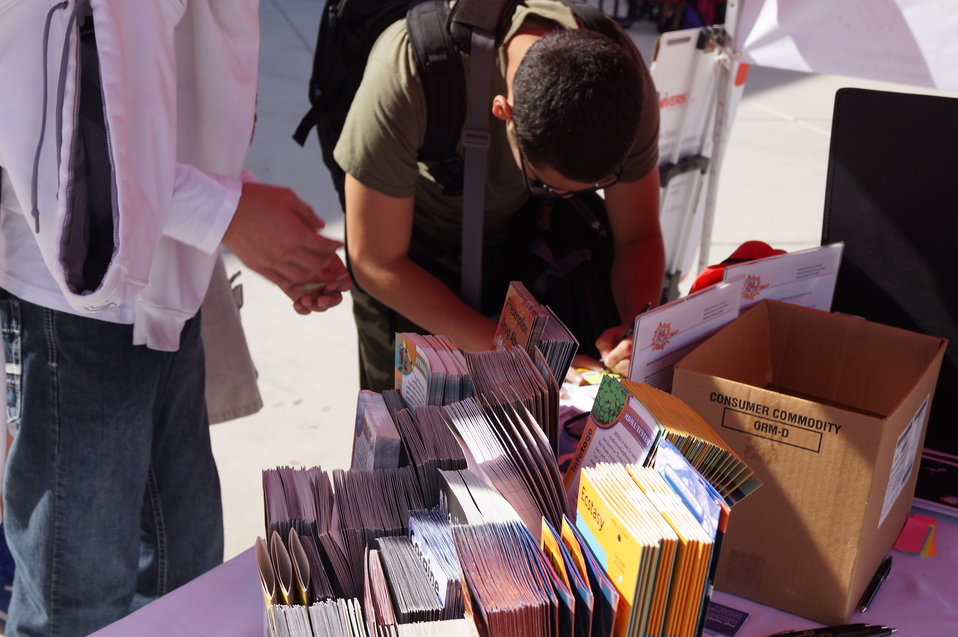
National Drug Facts Week - GILA RIDGE HS

The Drug Demand Reduction Program out of Yuma Arizona held numerous events at local schools to support NIDA's National Drug Facts Week, Jan. 27-Feb. 2 2014. Teens participated in drug awareness games, and helped to Shatter the Myths about teen substance abuse.